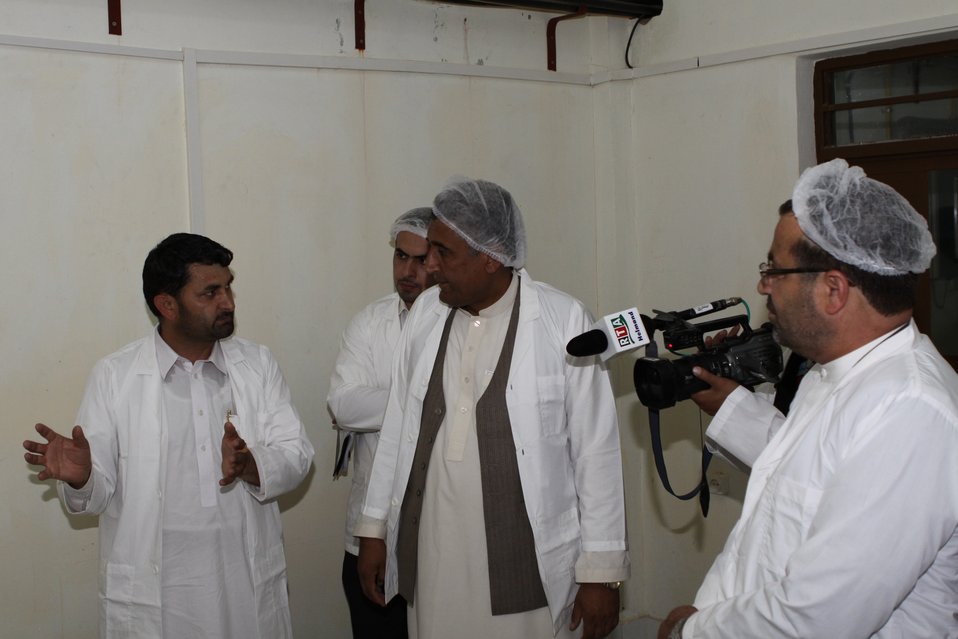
Bolan Poultry Farm